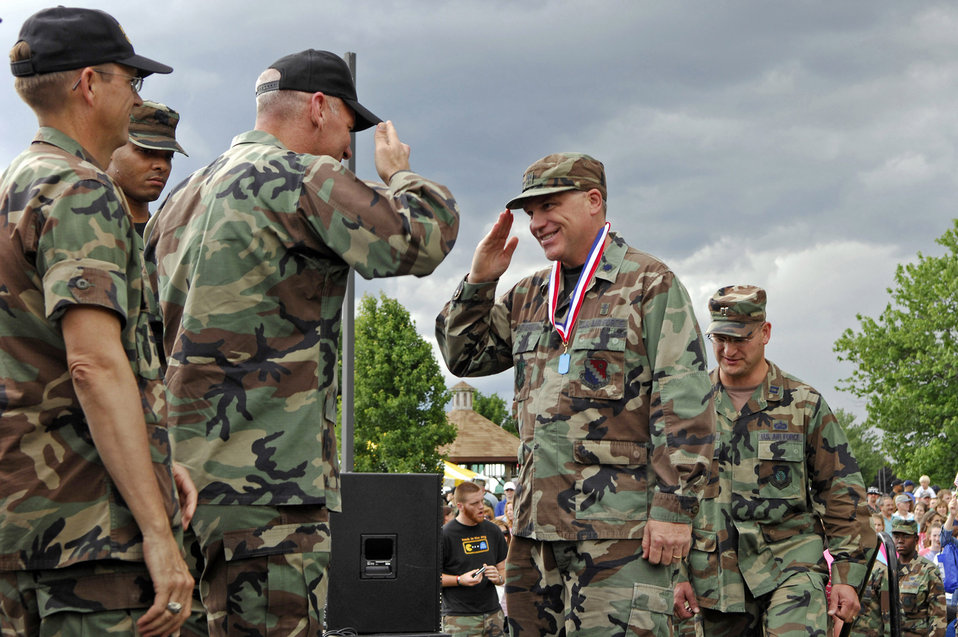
Hanscom Airmen receive heroes' welcome

Chaplain (Lt. Col.) Dennis Kitterman receives a medallion from Col. Tom Schluckebier during Hanscom's Heroes' Homecoming June 22 at Hanscom Air Force Base, Mass. During the event, more than 60 servicemembers who deployed within the last six months were formally welcomed home and recognized for their service. Chaplain Kitterman is the wing chaplain for the 66th Air Base Wing and Colonel Schluckebier is the 66th ABW commander.